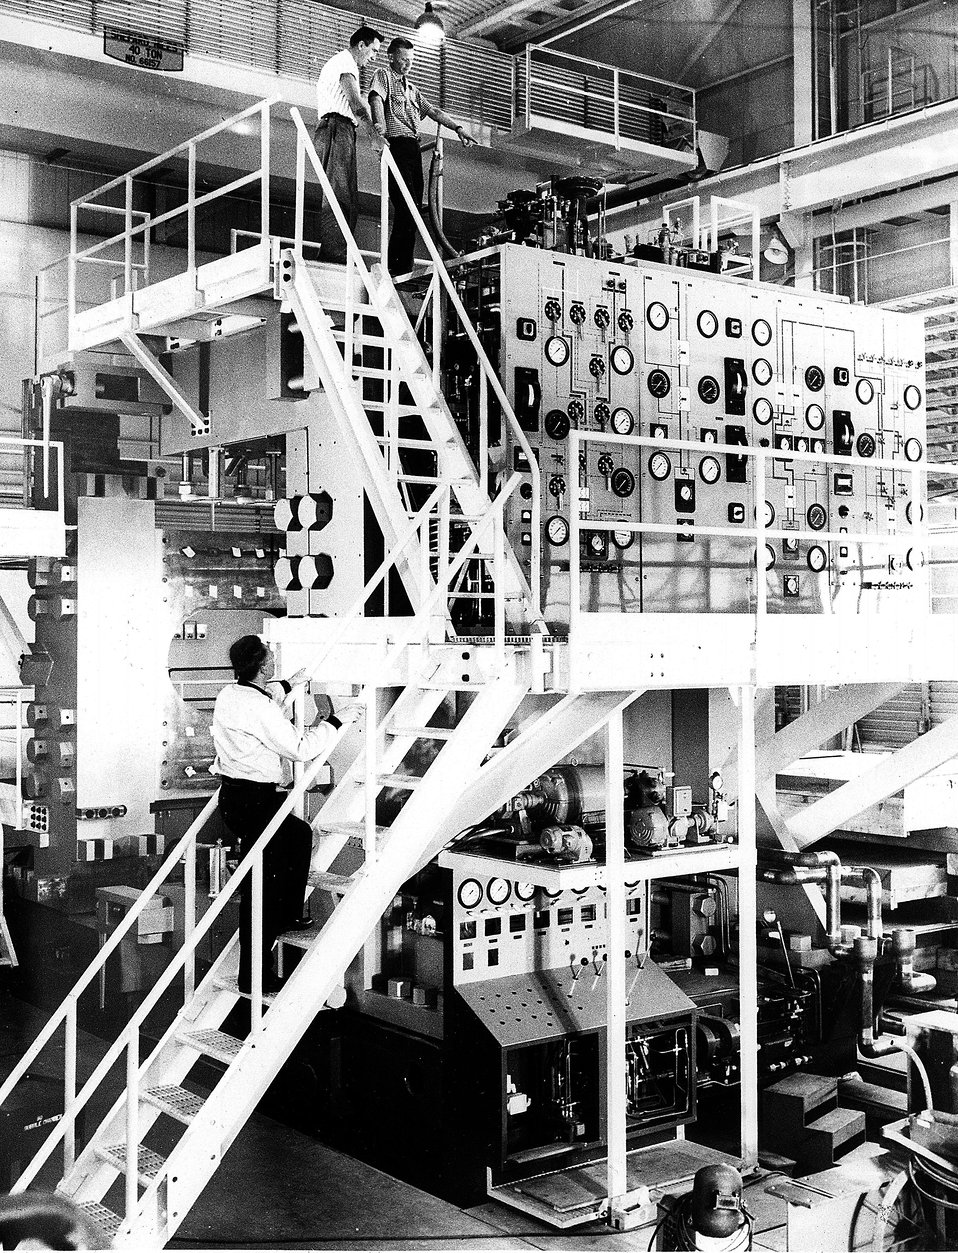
Inside the 80-inch Bubble Chamber Building. At the floor level is the hydraulic control panel for the elevation and rotation of the entire bubble chamber structure. c. 1963